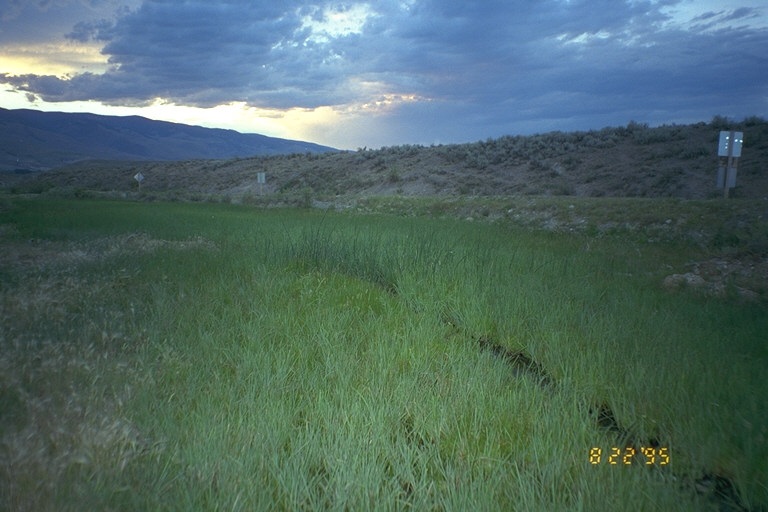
Riparian area Public Lands Salmon Field Office UCSC Upper Columbia Salmon Clearwater District